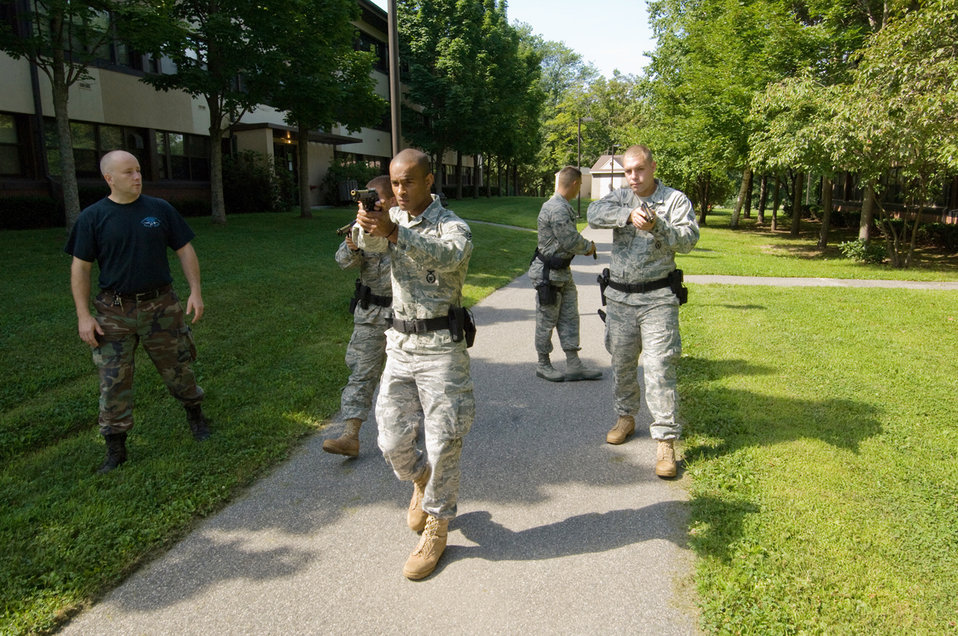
Hanscom Airmen train with Massachusetts state troopers

A Massachusetts State Police Special Tactical Operations Team monitors as Senior Airman Mark Cayer, Airman 1st Class Ronald Ashley, Airman 1st Class Edwin Torres and Senior Airman John Reed to learn methods for neutralizing an active shooter Aug. 6 at Hanscom Air Force Base, Mass. Massachusetts State Police Special Tactical Operations Team members educated Airmen on moving into and within the threat space using a diamond formation, where each member of the four-man team monitors a quarter of the 360-degree view around them. The Airmen are assigned to the 66th Security Forces Squadron.